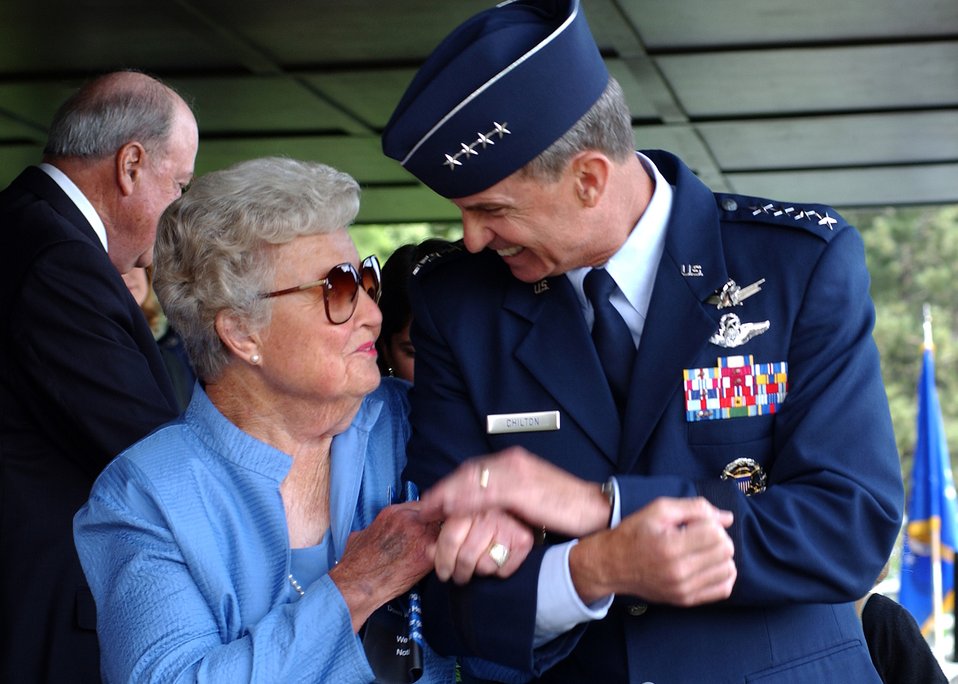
Former astronaut takes command of Air Force Space Command

Gen. Kevin P. Chilton, commander of Air Force Space Command, shares a celebratory moment with his mother, Shirley Chilton, during his assumption of command ceremony on Monday, June 26, at Peterson Air Force Base, Colo.